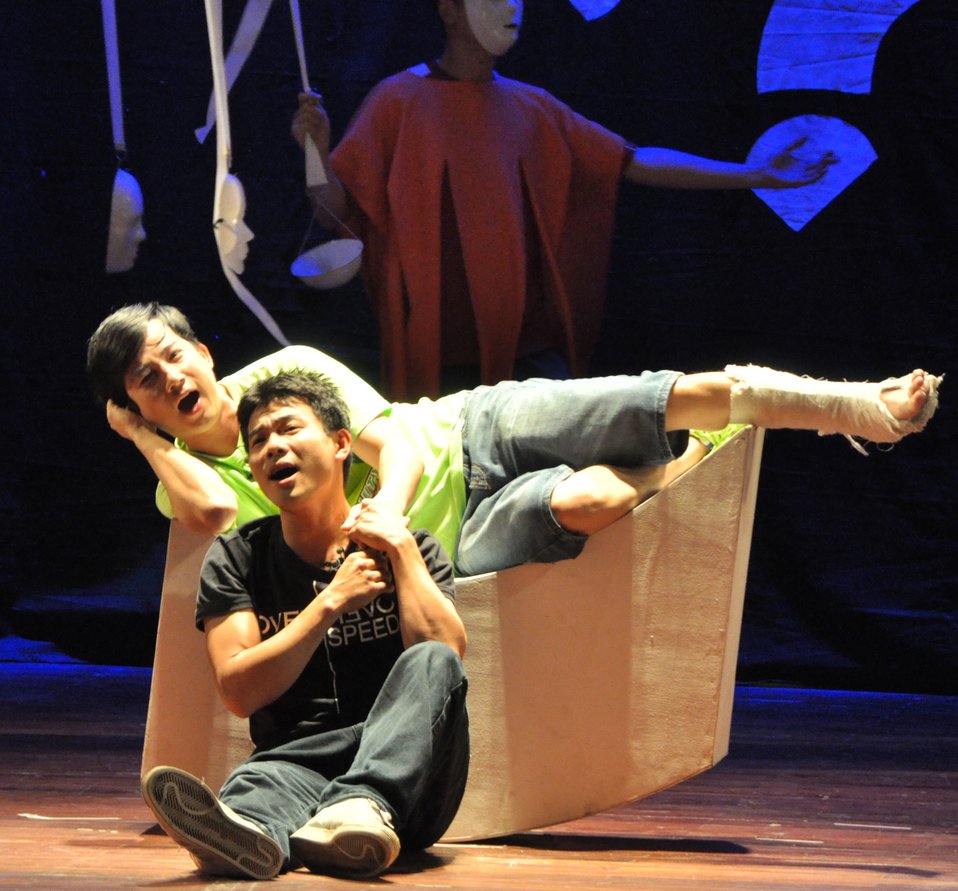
PEPFAR Musical Questions and Exclamations

Hanoi, May 17, 2013